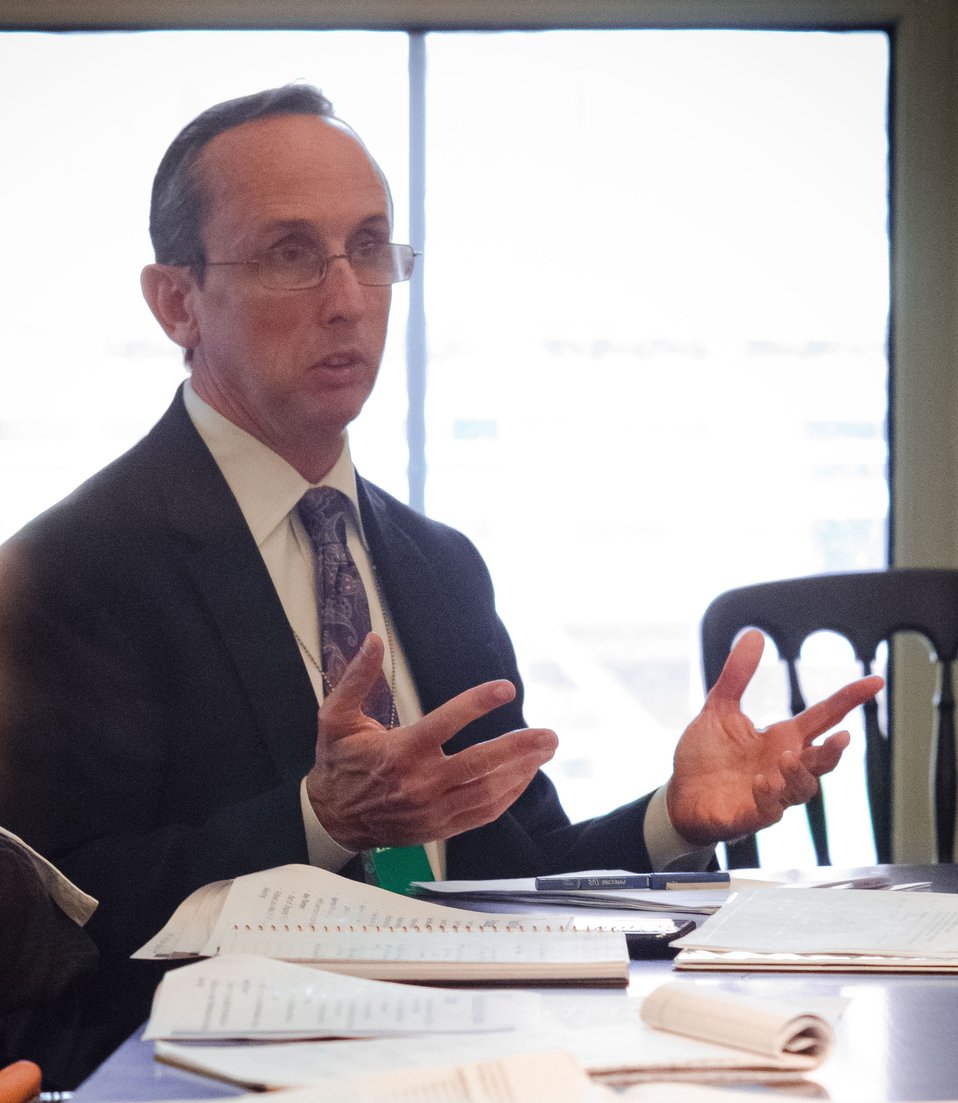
Health Resources and Services Administration Rural Health Policy Associate Administrator Tom Morris speaks during the White House Rural Council chaired by Agriculture Secretary Tom Vilsack at the White House in Washington, D.C. on Friday, Oct. 5, 2012. The White House Rural Council discusses recent White House announcements and Secretary Vilsack asked council members to outline their work plan for the coming months.